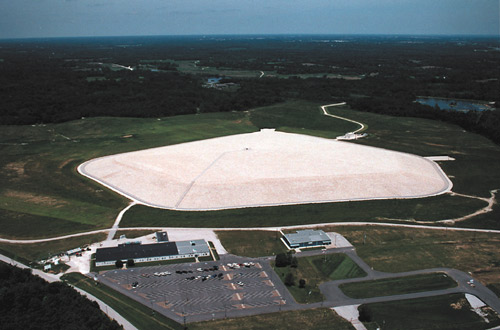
3

Weldon Spring